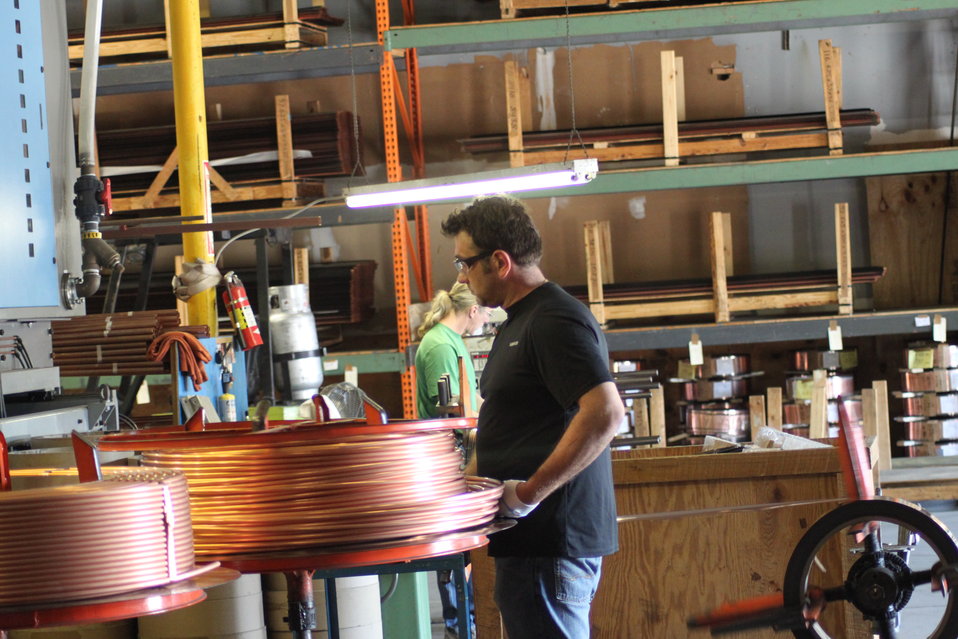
Norm 027